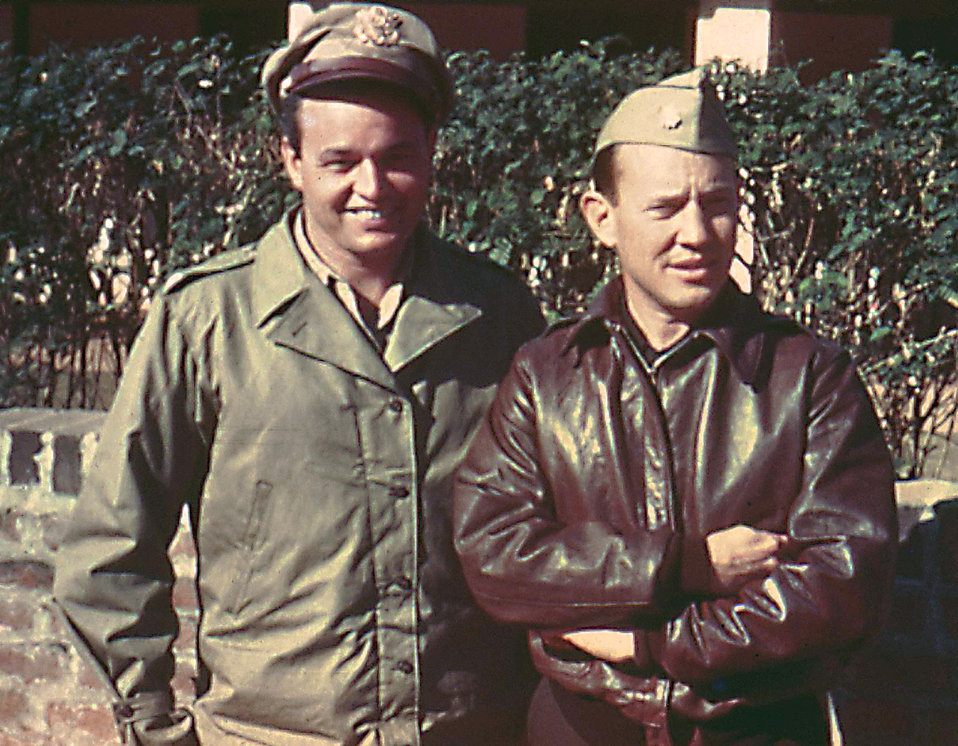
General Alison

Col. Philip Cochran and then-Lt. Col. John Alison, commanders of the 1st Air Commando Group.